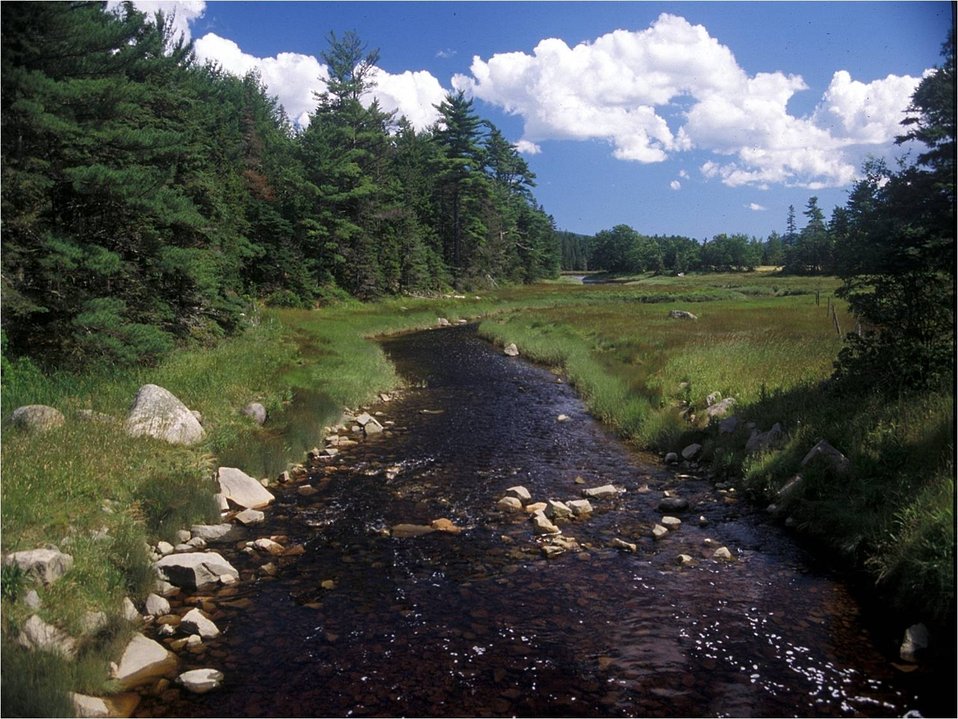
Riparian habitat